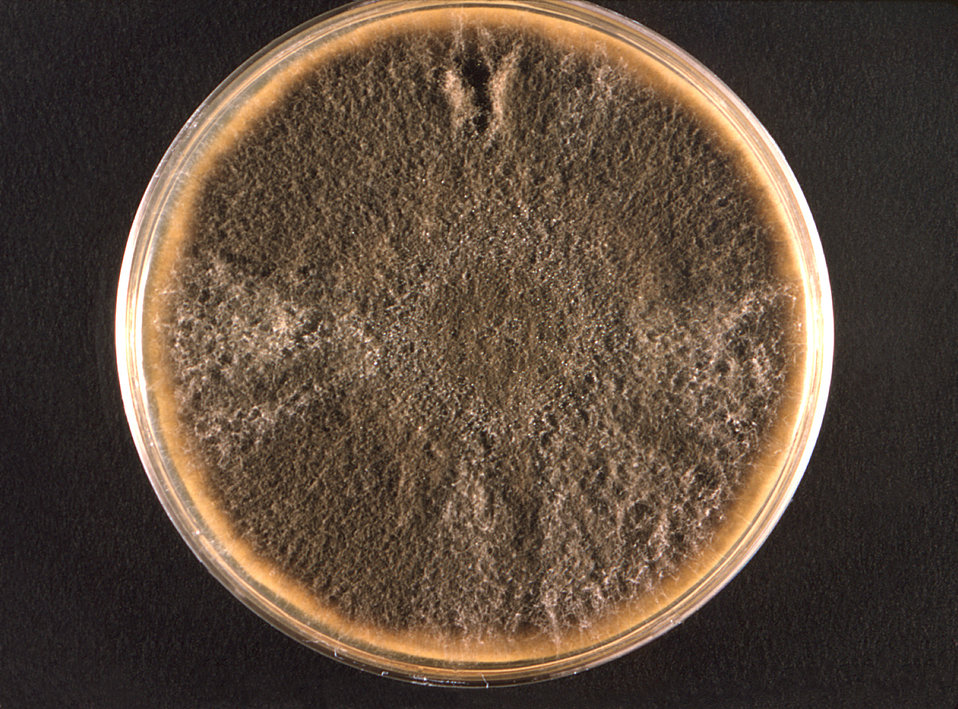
Photographed from the front, this 1971 image depicted a Petri dish within which a Bipolaris hawaiiensis fungal colony had been cultured. On its front surface, as depicted here, you'll note that the colonial texture appears 'woolly'. Normally, the reverse coloration appears as black, but is sometimes observed as brown with areas becoming black.